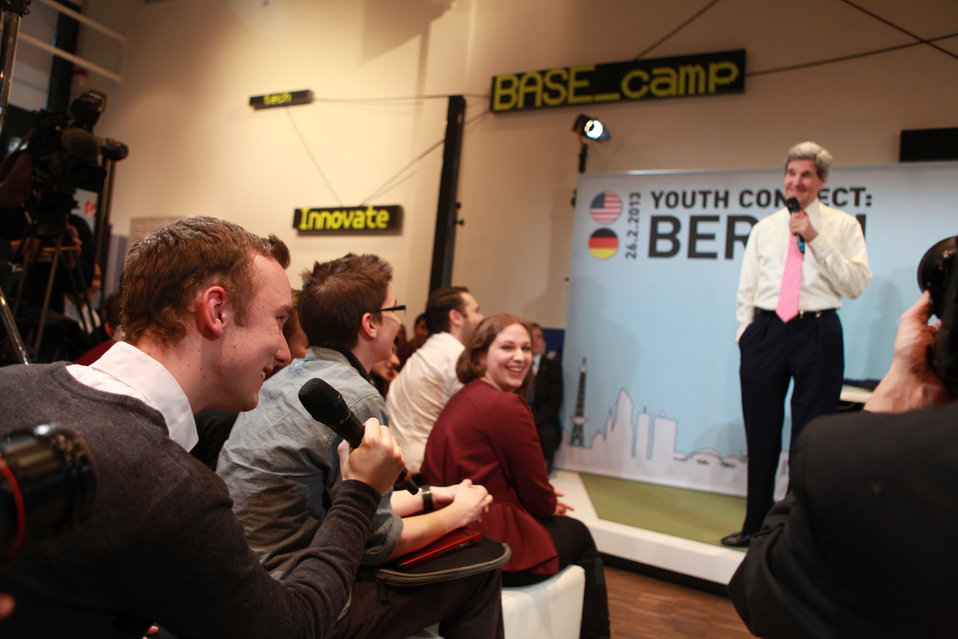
Secretary Kerry Engages Young German Innovators and Leaders in Berlin

U.S. Secretary of State John Kerry engages young German innovators and leaders at his first Youth Connect event with moderator/journalist Cherno Jobatey in Berlin, Germany, February 26, 2013.